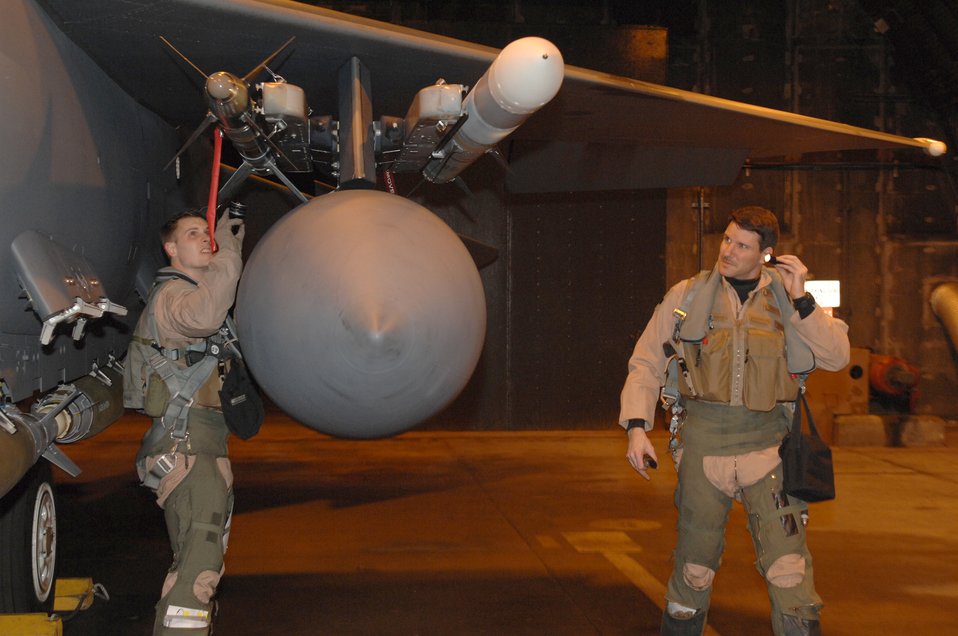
Odyssey Dawn

Maj. Lucas Teel, 492nd Fighter Squadron pilot, and Lt. Col. Clint Mixon, 492nd FS commander, perfom preflight checks on an F-15E Strike Eagle prior to their departure from RAF Lakenheath, England, March 19, 2011. Units from the 48th Fighter Wing are currently conducting pre-deployment procedures in support of Operation Odyssey Dawn. The 48th Fighter Wing provides all-weather, day or night air superiority and air-to-ground precision combat capability as well as combat search and rescue.